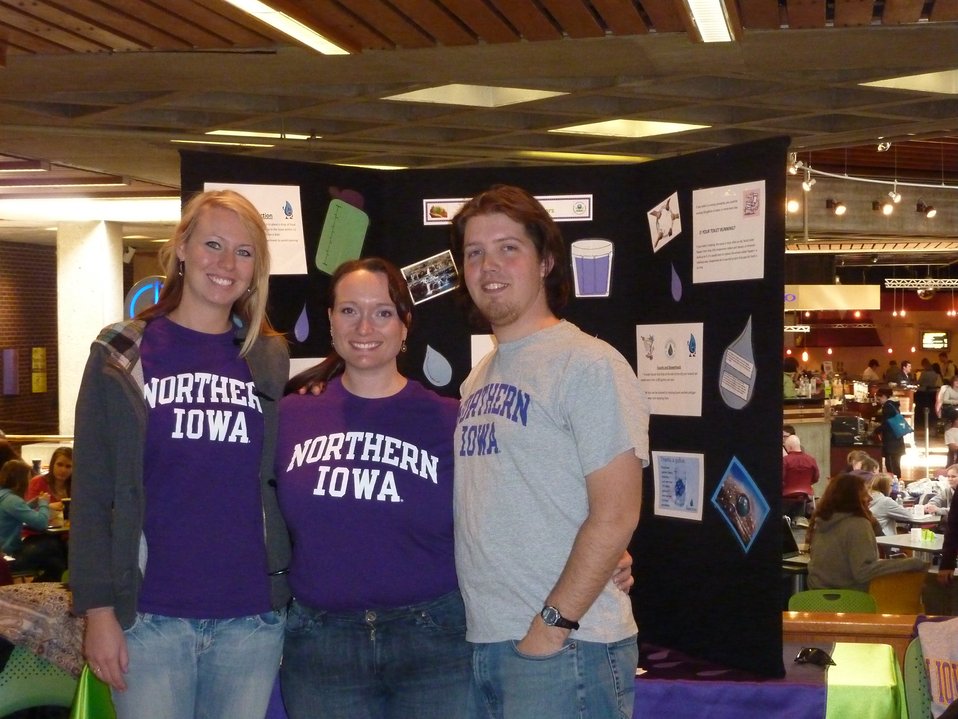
July, 2011 Fix a Leak! Conserve water on campus!

EPA ecoAmbassadors from the University of Northern Iowa helped educate fellow students about water conservation during Fix-A-Leak week on campus.

Join the conversations @ www.facebook.com/epaoncampus